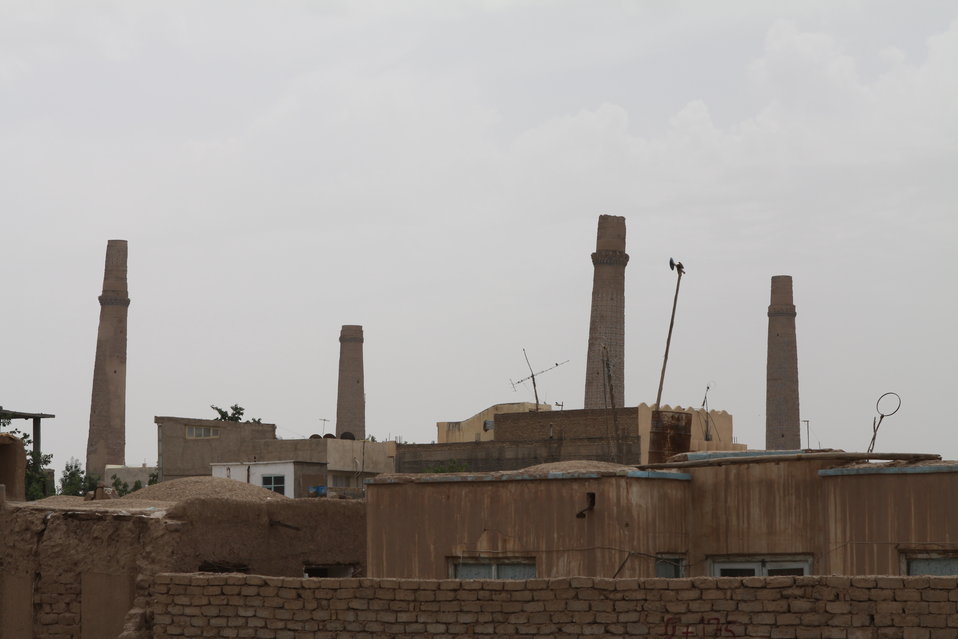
100525 Hirat Marble Conference 594